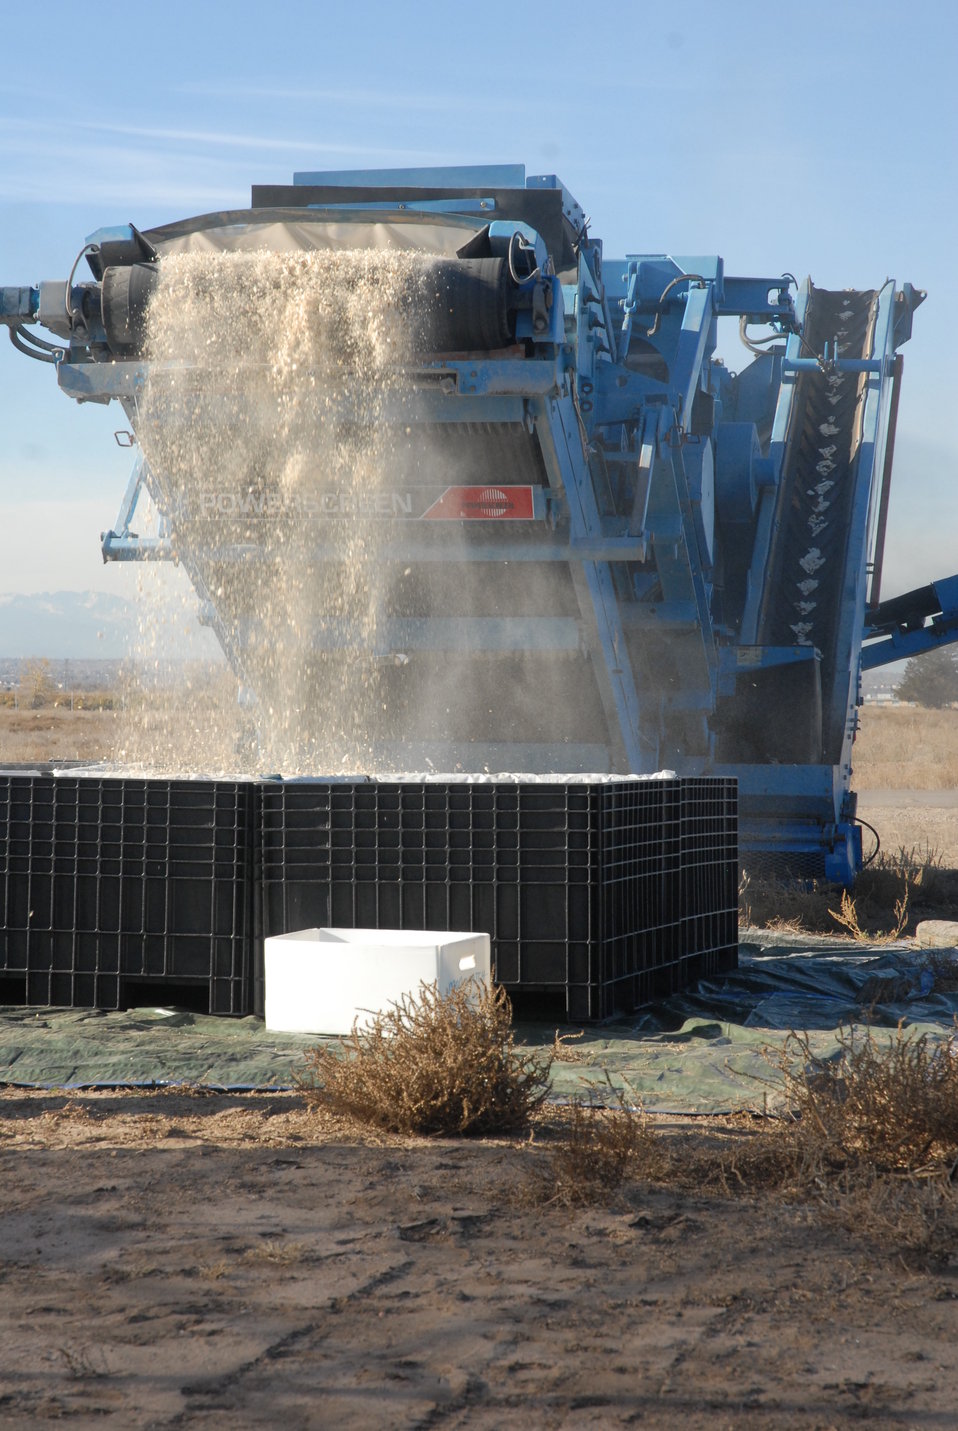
The crusher in action as it pulverizes the ivory